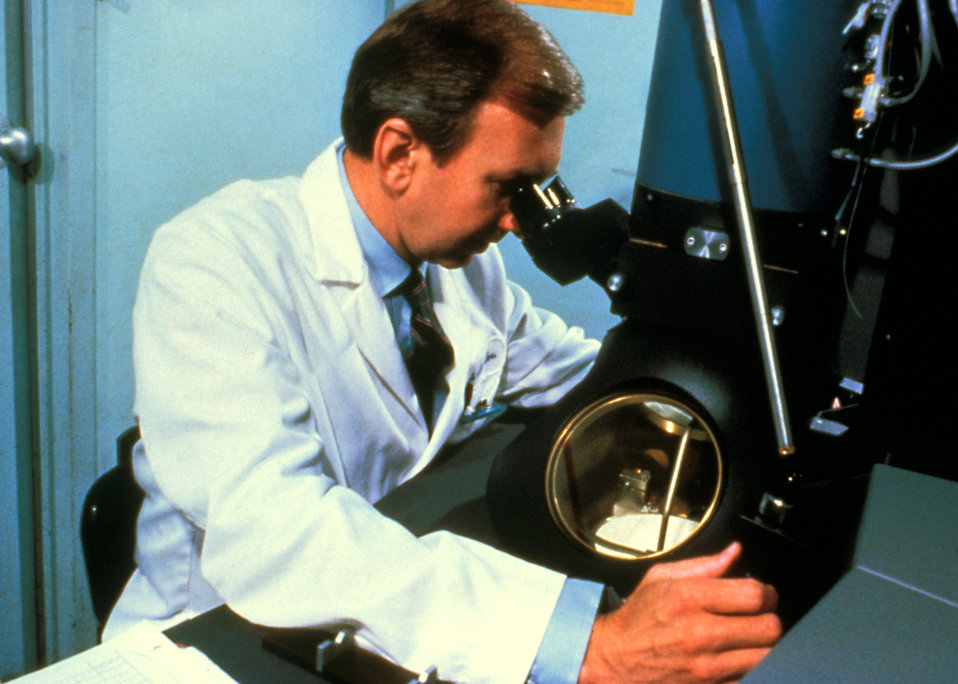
This CDC lab technician is carrying out AIDS research during 1988 laboratory studies.